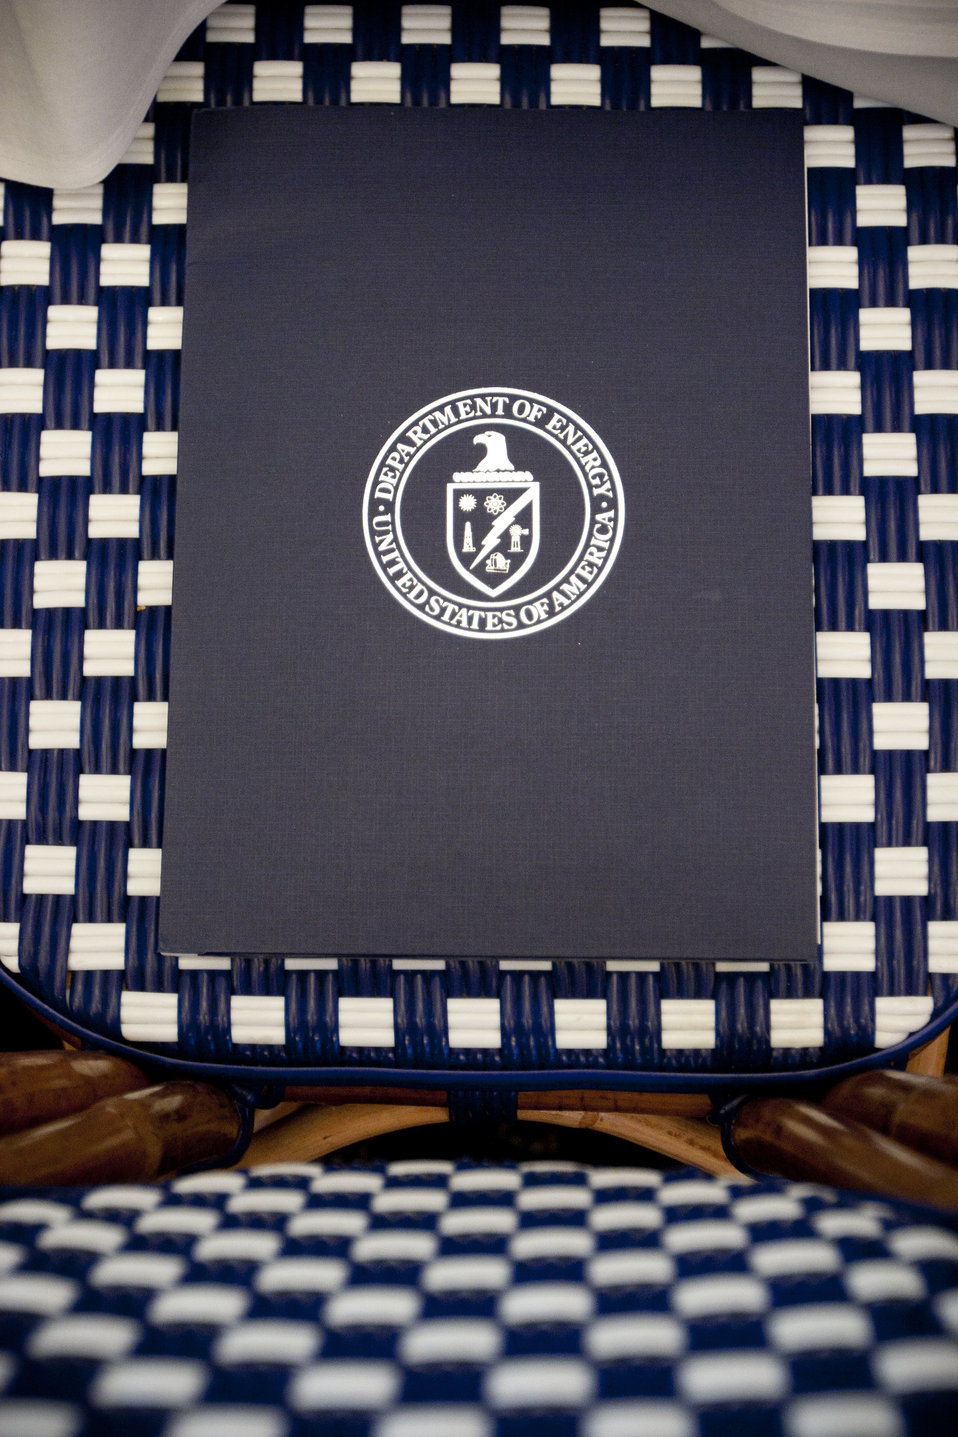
WomenandEnergy 05